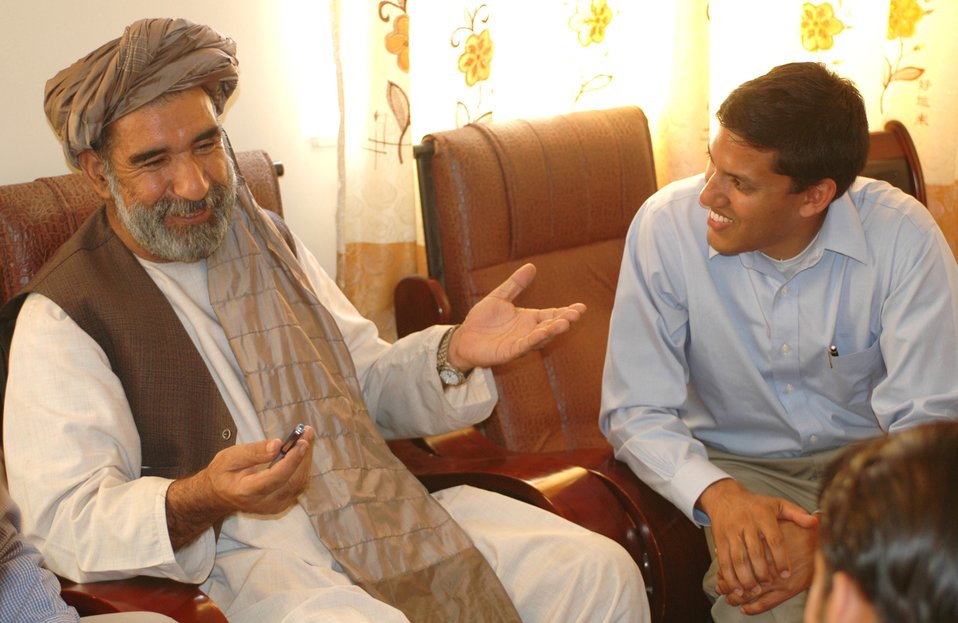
Dr Shah Visits Argandab April 10, 2010